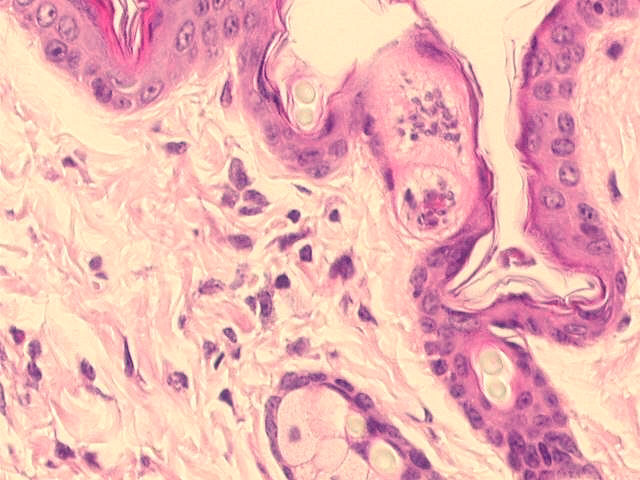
Schistosomulum in abdominal skin of a naive mouse.